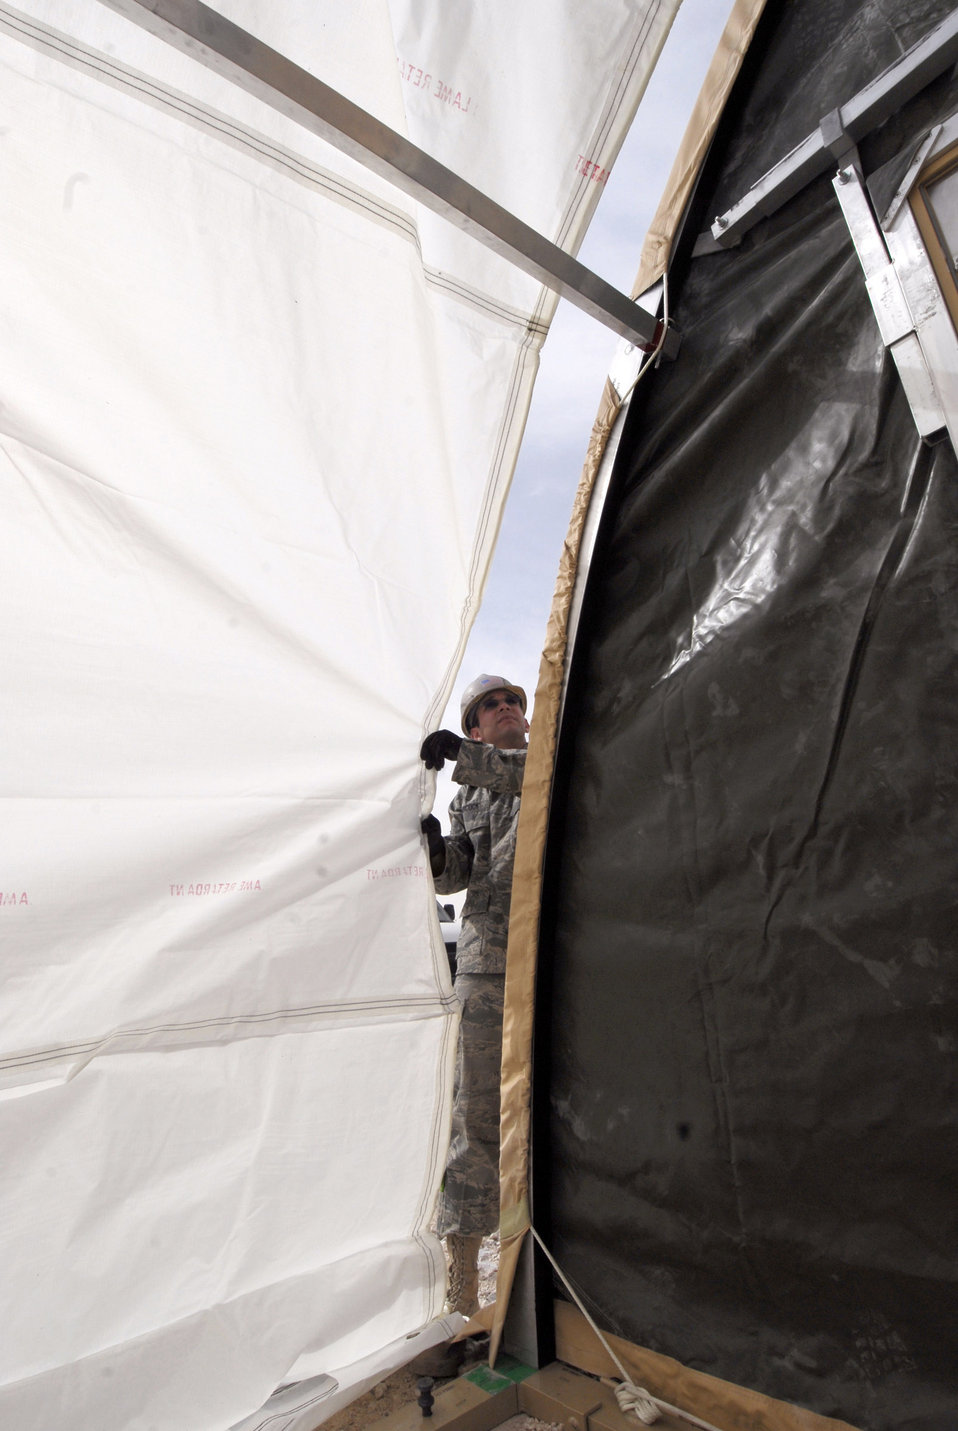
Raising the roof

Airman 1st Class Michael Babcock ensures the skin for a California Medium Shelter System does not tear over the archway being covered Feb. 17 at an air base in Southwest Asia. Airman Babcock is a structural journeyman with the 379th Expeditionary Civil Engineer Squadron. He is from Sheridan, Mich., and is deployed from Dover Air Force Base, Del.